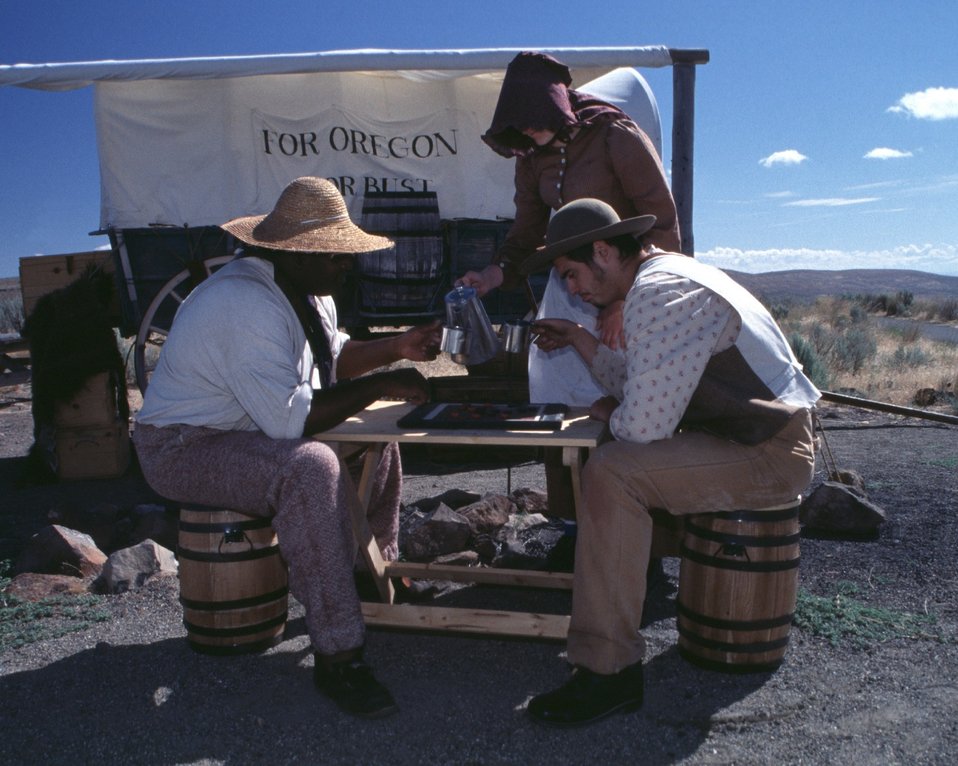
Dylan Prichertt, Rebecca Crow, and Brandon Kames portrqay oregon Trail Pioneers at a wagon encampment.